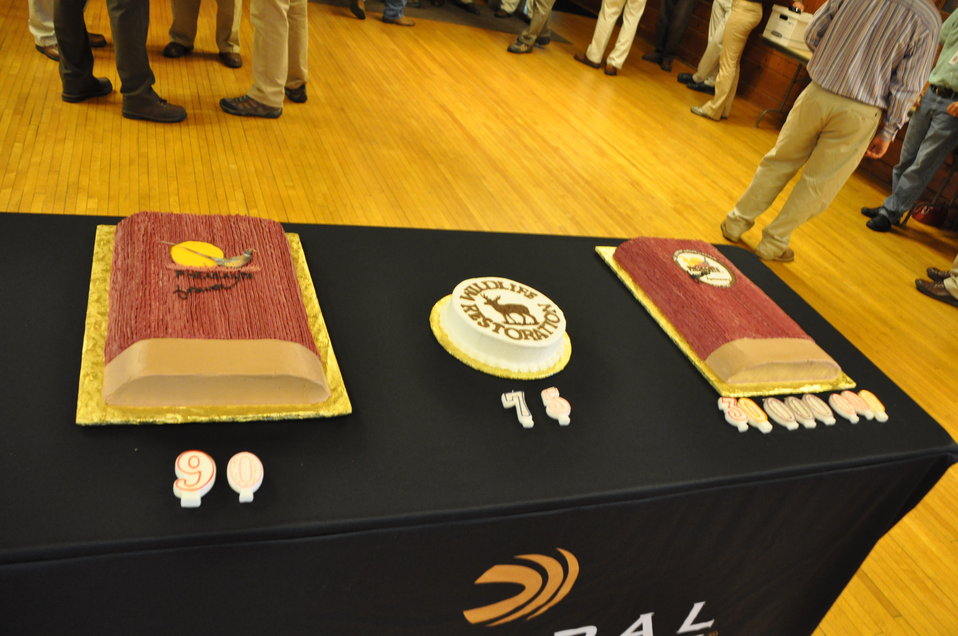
WSFR Celebrates

Conservation leaders also celebrated the 90th anniversary of Federal Premium Ammunition, 75th Anniversary of Ducks Unlimited, and 30th Anniversary of Pheasants Forever.